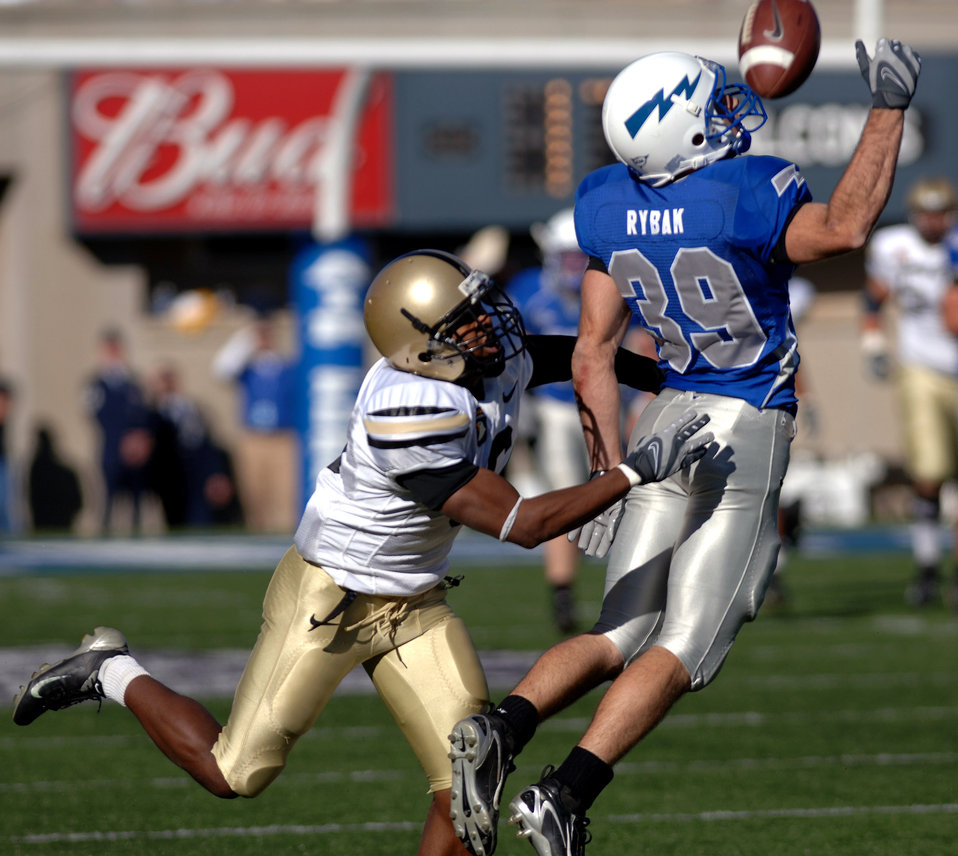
Football: Falcons ride record-breaker Hall over Army

Falcon cornerback Garrett Rybak breaks up a pass intended for Army wide receiver Corey Anderson during Air Force's 30-10 win over the Black Knights Nov. 3 at Falcon Stadium in Colorado.